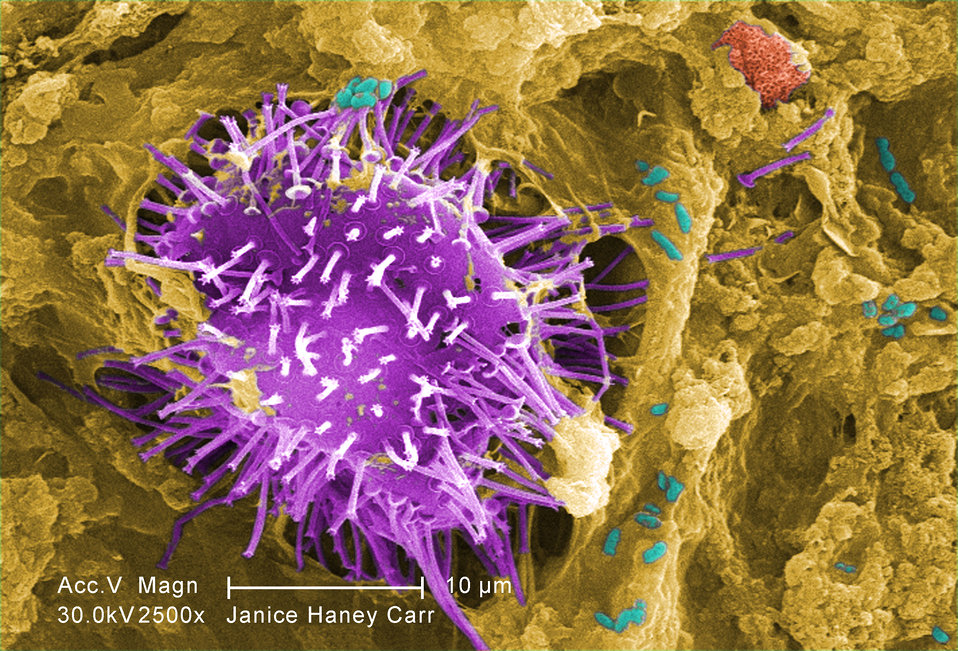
Under a moderately-high magnification of 2500X, this digitally-colorized scanning electron micrograph (SEM) of an untreated water specimen extracted from a wild stream mainly used to control flooding during inclement weather, revealed the presence of unidentified organisms, which included bacteria, protozoa, and algae. In this particular view, a microorganism is featured, the exterior of which is covered by numerous projections imparting an appearance of a sea urchin. This microscopic 'pin cushion' was teathered to its surroundings by a biofilm within which many bacteria, and amoeboid protozoa could be seen enmeshed as well. See PHIL 11781 for a greater magnification of this organism's exterior.